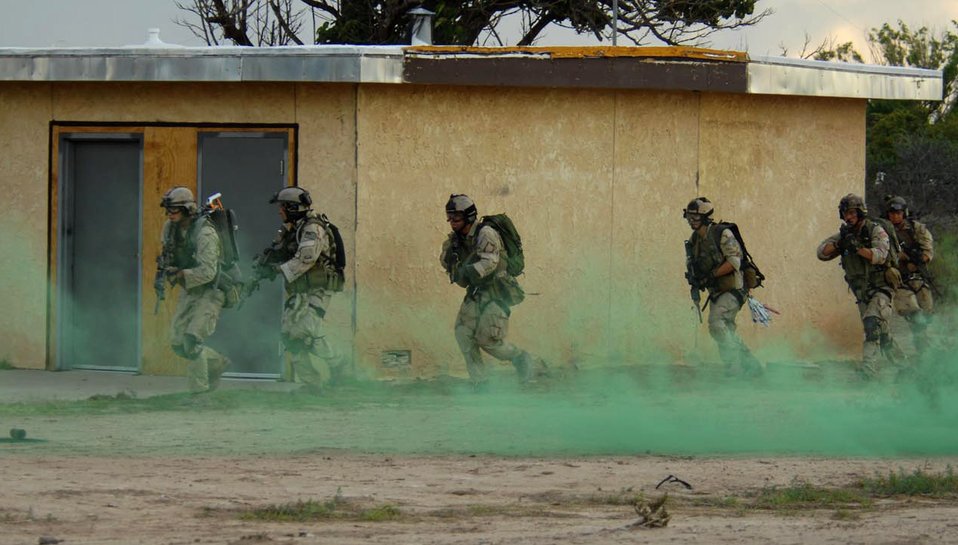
Angel Thunder 2007

Pararescuemen from the 58th Rescue Squadron at Nellis Air Force Base, Nev., move in to rescue simulated survivors during a training scenario July 13 at Playas, N.M., that is part of Exercise Angel Thunder 2007. Angel Thunder is a combat search and rescue task force exercise designed to test theater spin-up capabilities and examine the integration of all Air Force assets in mission planning procedures and mission execution.